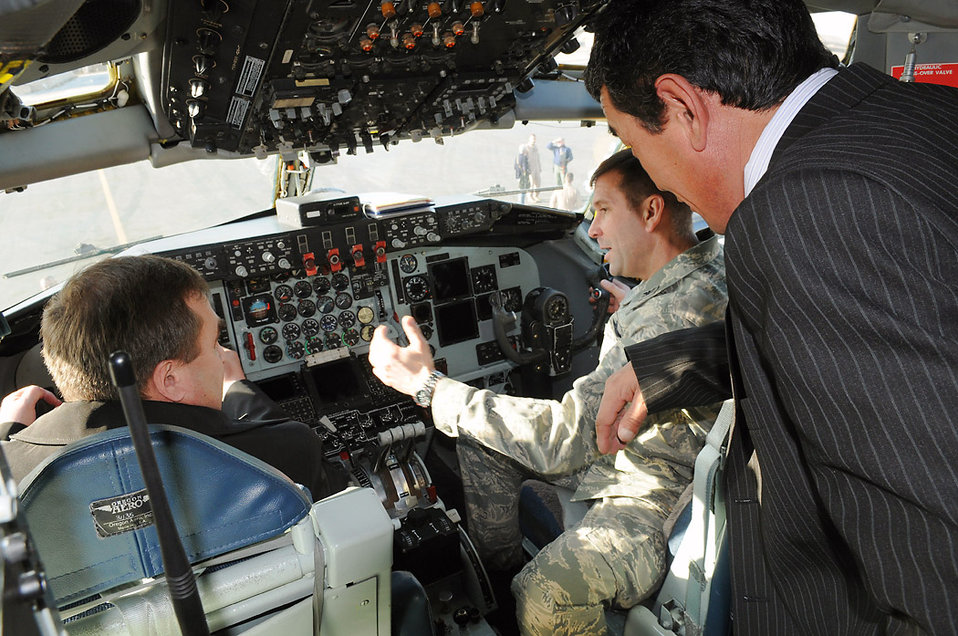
Afghan mayors visit Manas

Col. Christopher Bence explains the KC-135 Stratotanker mission to two local Kyrgyz village mayors during a Dec. 10 tour of Manas Air Base, Kyrgyzstan. Leaders from six villages around Manas AB visited the base and had lunch with wing leaders. The visit strengthened friendships and issues affecting the local villages that the base can assist with were discussed. Colonel Bence is the 376th Air Expeditionary Wing commander.